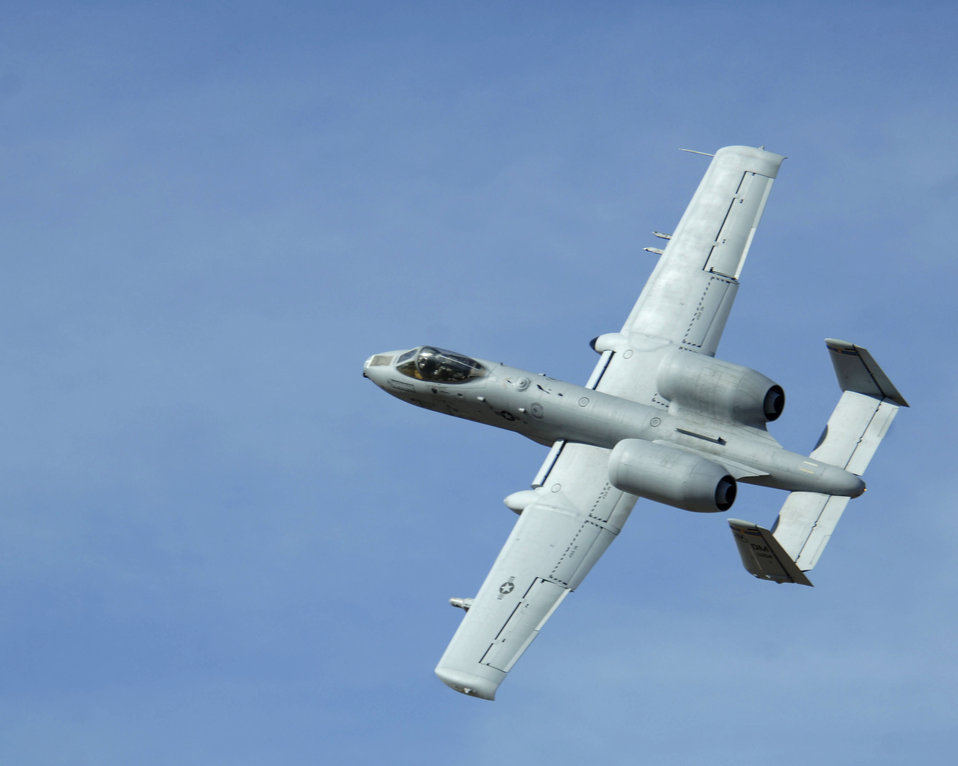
Hawgsmoke 2006

An A-10 Thunderbolt II drops a BDU-33, toward a marked target as part of the 2006 Hawgsmoke competition, Thursday, March 23, 2006, at the Barry-Goldwater Range, Gila Bend Air Force Auxiliary Field. The BDU-33 is a 25-pound training bomb used to simulate the M1a-82 500-pound bomb. As part of the competition, the A-10 Thunderbolt II performs this as a 30 degree dive bomb, 15-degree low angle high drag bomb, and level bombing. . This year's competition coincides with the 30th anniversary of the Warthog. Twenty squadrons from around the world come together to gain the honor of the